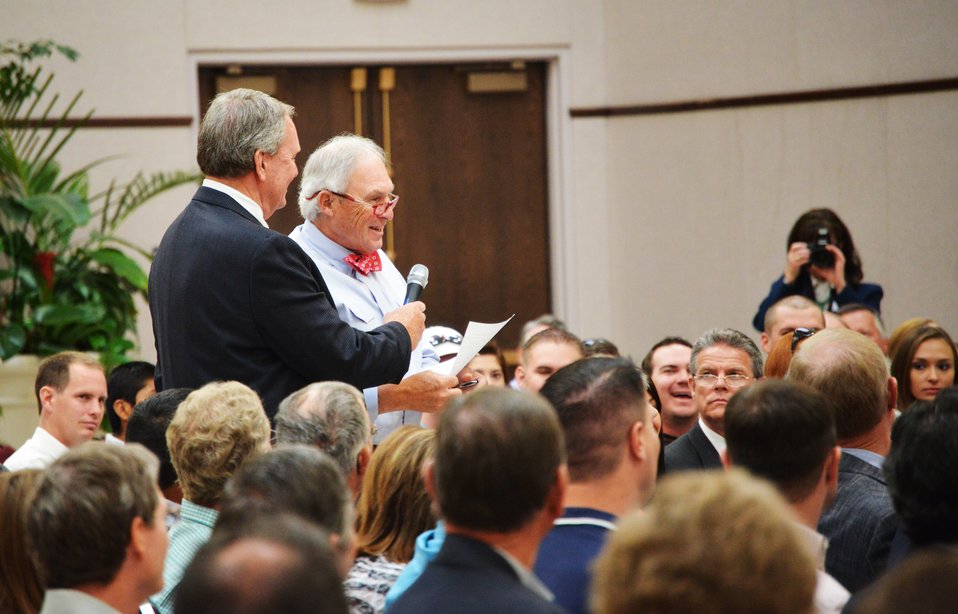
Agriculture Secretary Tom Vilsack answers questions from agriculture leaders at town hall meeting held at Texas Tech University in Lubbock, TX on Friday, Jun. 14, 2013. Secretary Vilsack discussed the need for Congressional action on a Food, Farm and Jobs Bill, as well as a solution to fix America's broken immigration system.